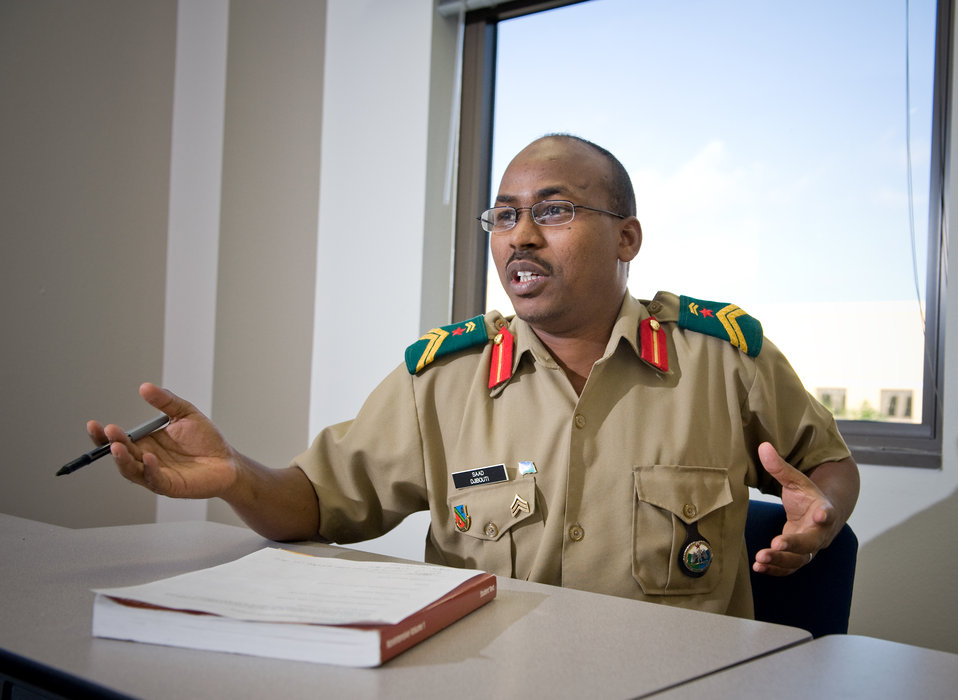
Lackland-based institute teaches English to partner nations

Djibouti army Sgt. Saad Moussa Bouraleh discusses some intricacies of native languages during the American English Language Instructor Course Oct. 22 at the Defense Language Institute at Lackland Air Force Base, Texas.